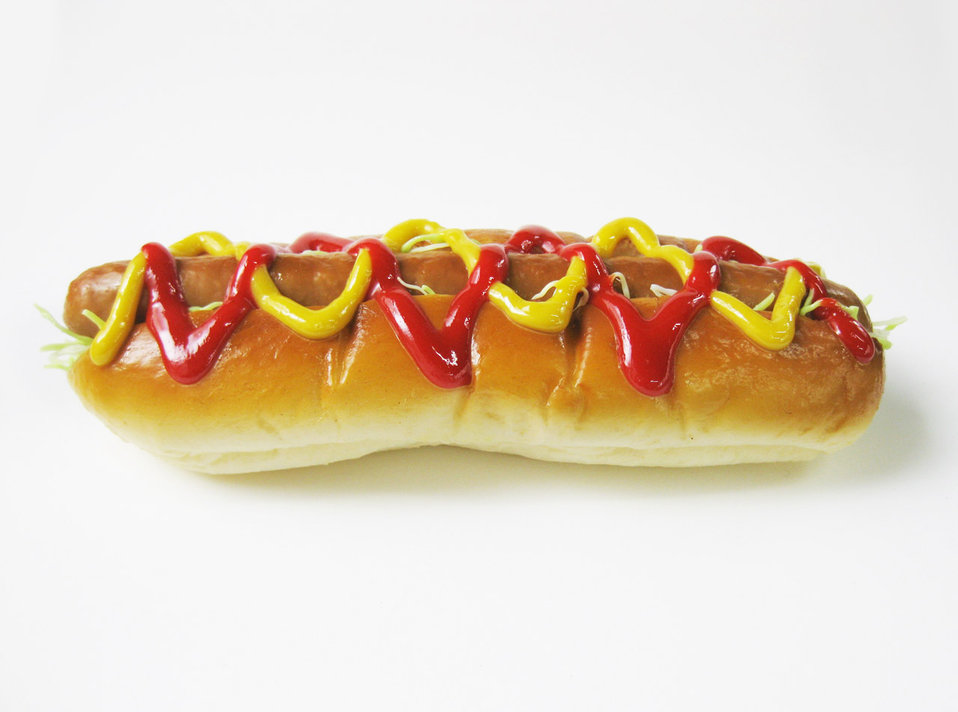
Hot dog with cabbage.